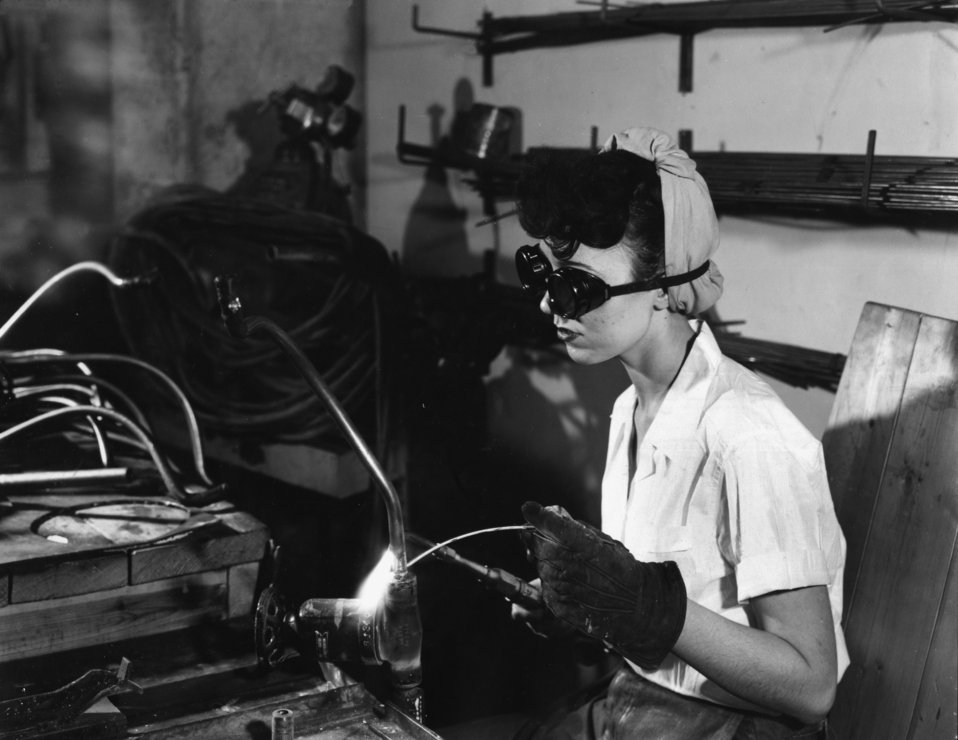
Welding at Prefab Shop K-25

K-25-69 DOE photo Ed Westcott 2-26-1945 Oak Ridge Tennessee